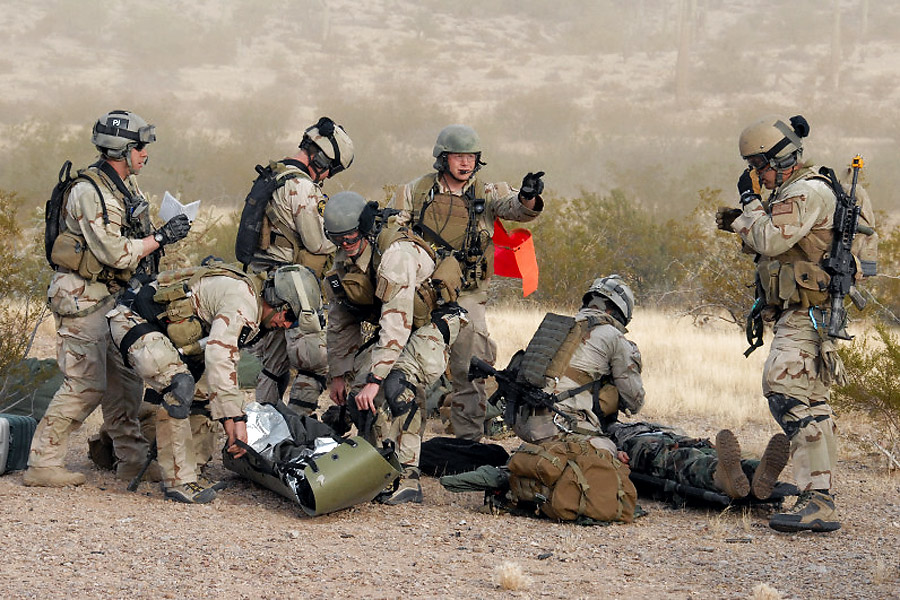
Exercise Angel Thunder provides lifesaving training

Exercise Angel Thunder participants prepare survivors for rescue by an inbound HH-60G Pave Hawk crew Dec. 12 at Davis-Monthan Air Force Base, Ariz. Exercise Angel Thunder is a personnel recovery exercise designed to train a joint, interagency and international audience in effectively executing the personnel recovery mission.